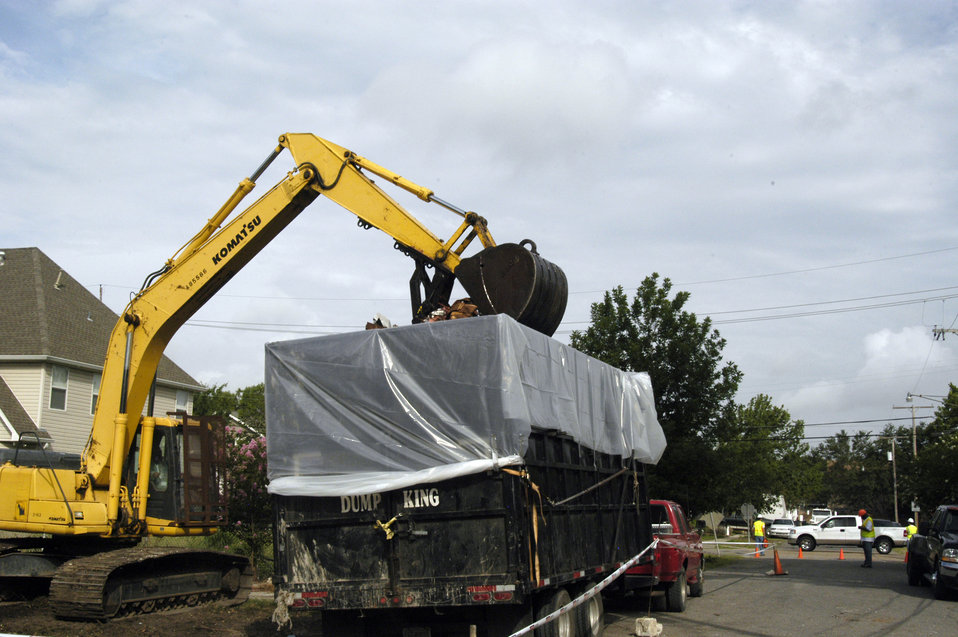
Many of the older homes and buildings in the New Orleans, LA, locale that were destroyed by Hurricane Katrina contained asbestos material (i.e. asbestos roofing tiles, transite siding, insulation, floor tiles, and popcorn ceilings). The U.S. Army Corps of Engineers (USACE) was mandated to follow strict environmental protocols in the demolition of these homes that were designated Regulated Asbestos Containing Material (RACM) demos. The asbestos contained material was placed into trucks lined with thick plastic, which was sealed before the truck could leave the area.